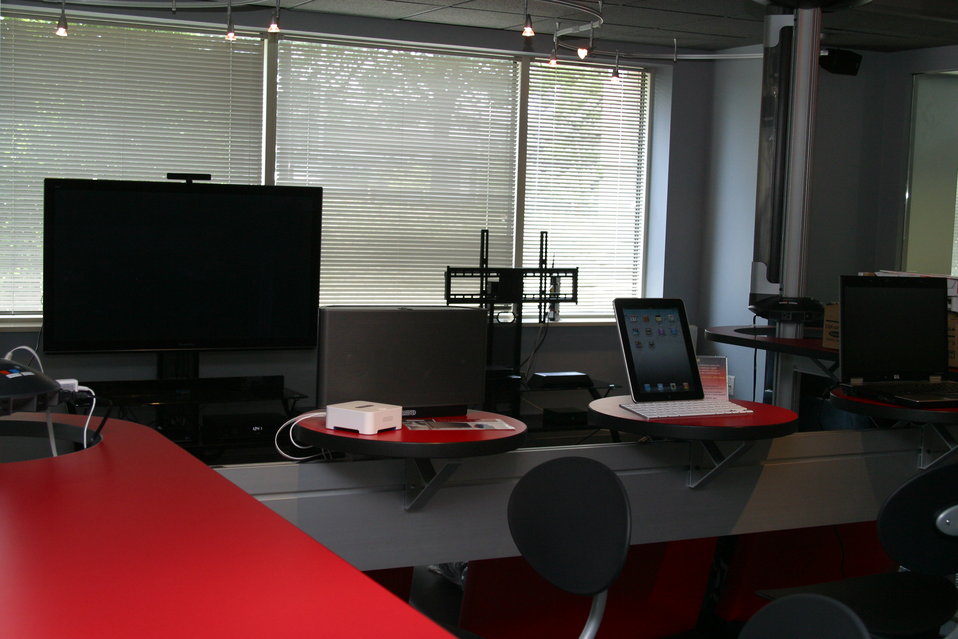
TEC Center

Debuting the FCC TEC Center on Wednesday July 13, 2011